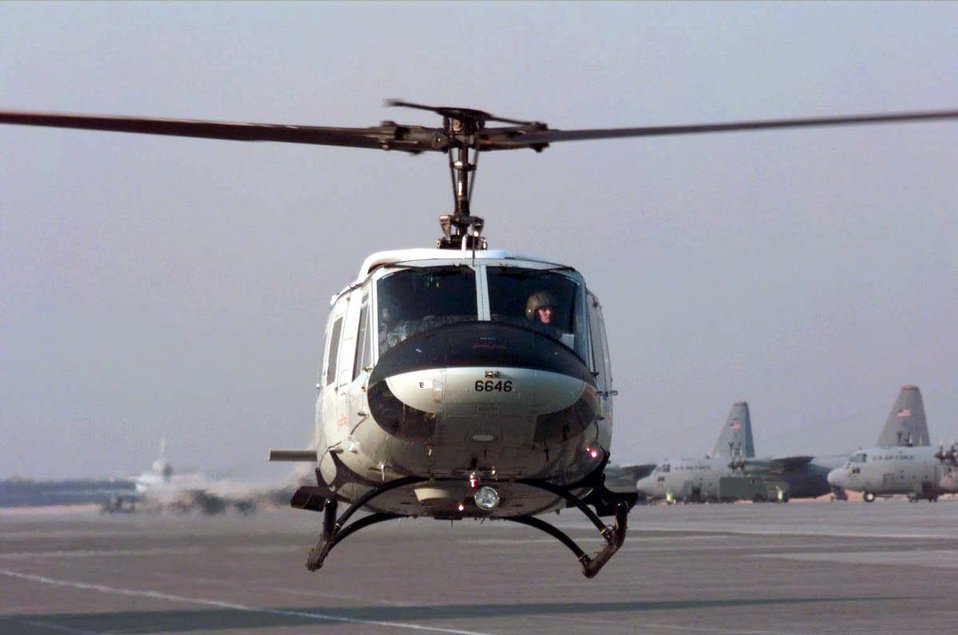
Huey lift off

YOKOTA AIR BASE, Japan -- First Lieutenant Destry R. Hill and co-pilot Capt Brandi S. Barham, both members of the 459th Airlift Squadron, takes off for a mission on a UH-1N helicopter here. The mission of the 459th AS is to provide airlift support, medical evacuation and security in the Pacific theatre.